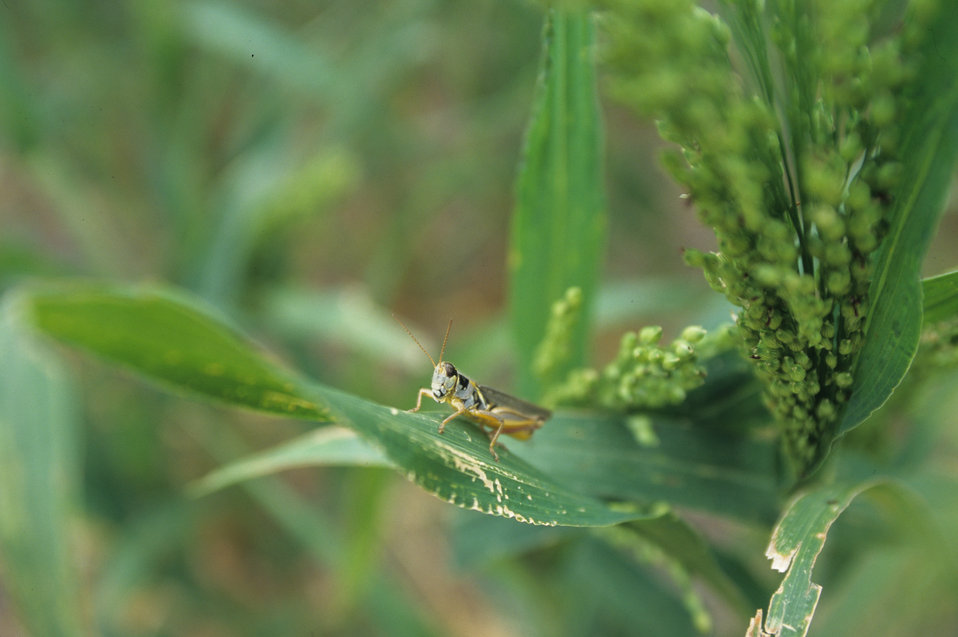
The Red-legged Grasshopper (Melanoplus femurrubrum) has a reddish-brown back, a greenish-yellow belly, and red hind legs, hence its binomial name femurrubrum. The Red-legged Grasshopper is found throughout the U.S., Mexico, and Canada. This grasshopper feeds on a wide variety of plants and in large numbers can be a crop pest.